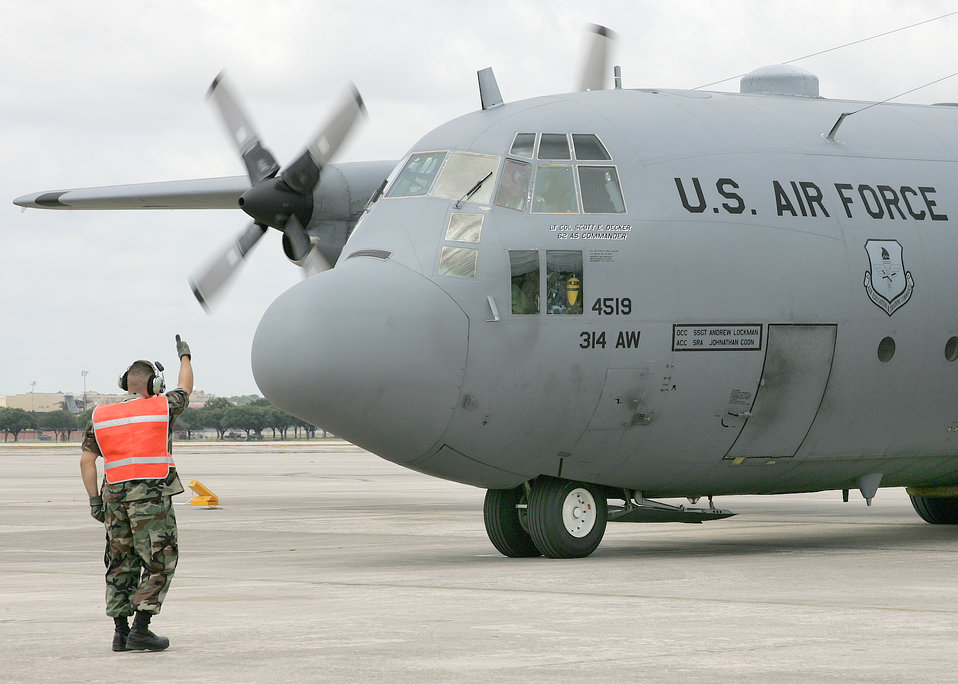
Hercules moves to new home

LACKLAND AIR FORCE BASE, Texas -- Staff Sgt. Daniel Garza marshals in a retiring C-130 Hercules from Little Rock Air Force Base, Ark., to its parking place at the Inter-American Air Forces Academy's 318th Training Squadron here. The aircraft will be used as a ground trainer for updated C-130 crew chief courses at the squadron. Sergeant Garza is a crew chief instructor.